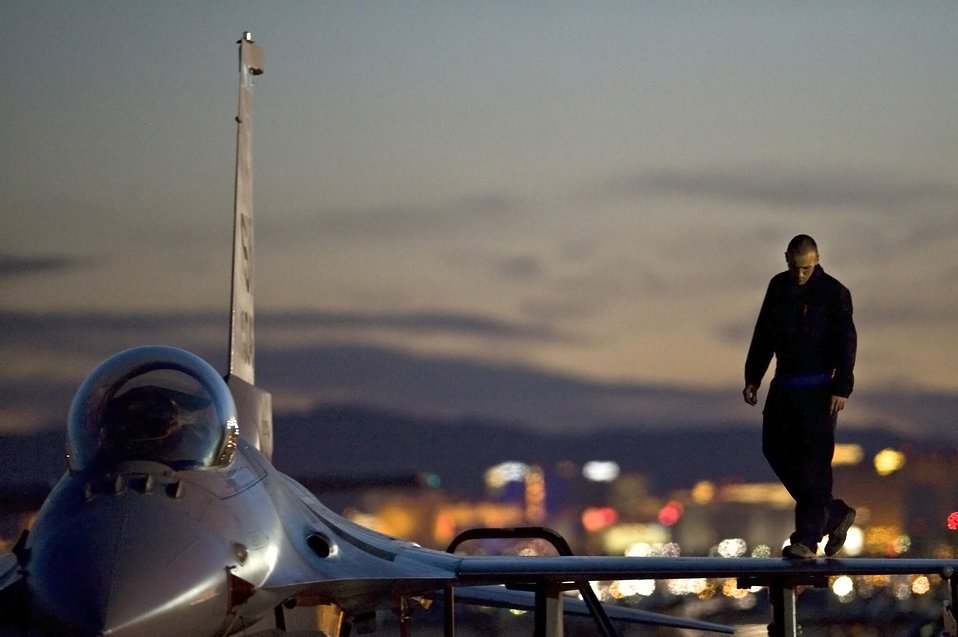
On the wings of a Falcon

Airman 1st Class Jeremy Hunt inspects the wing of an F-16 Fighting Falcon March 2, 2011, during Red Flag at Nellis Air Force Base, Nev. Airman Hunt is a crew chief assigned to the 20th Fighter Wing at Shaw AFB, S.C.